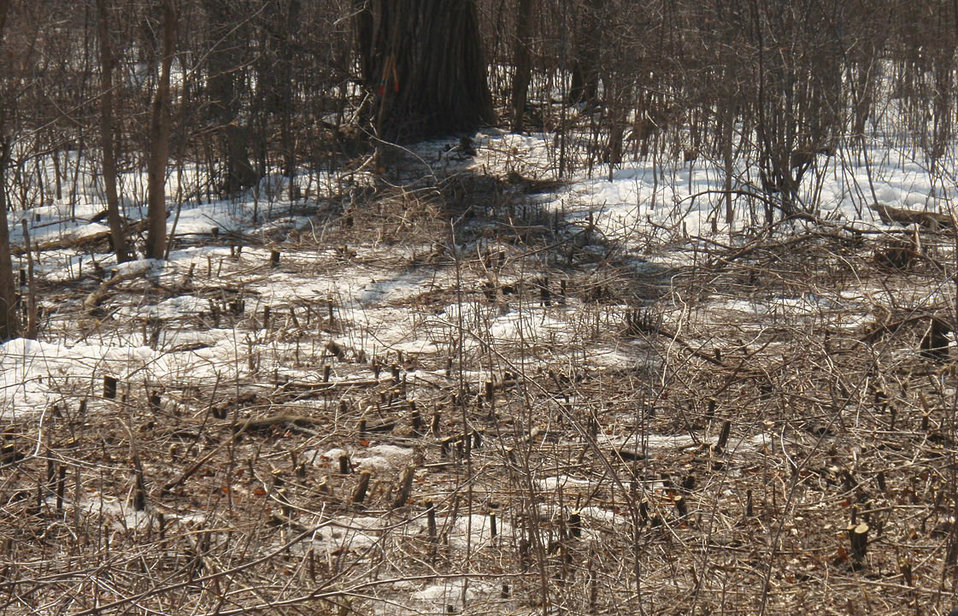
Smaller Vegetation

An area where many smaller stems have been cut.